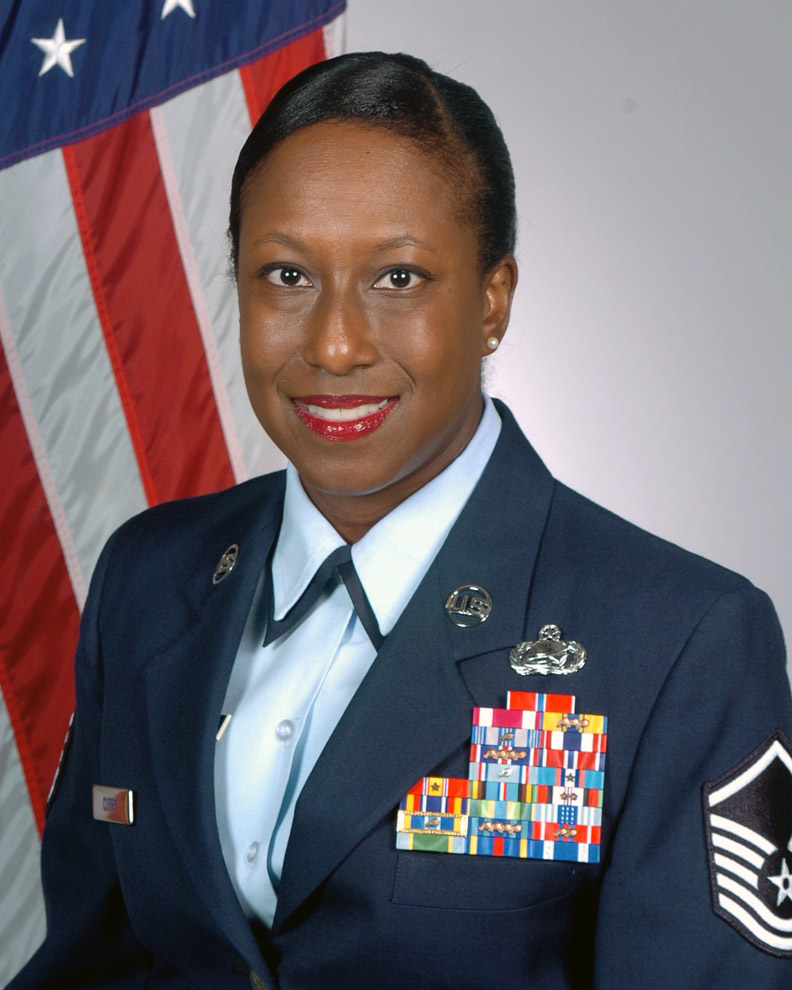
Air Force officials honor 12 Outstanding Airmen of the Year

Master Sgt. Carla Curry from Randolph Air Force Base, Texas, is one of the 12 Outstanding Airmen for 2008.